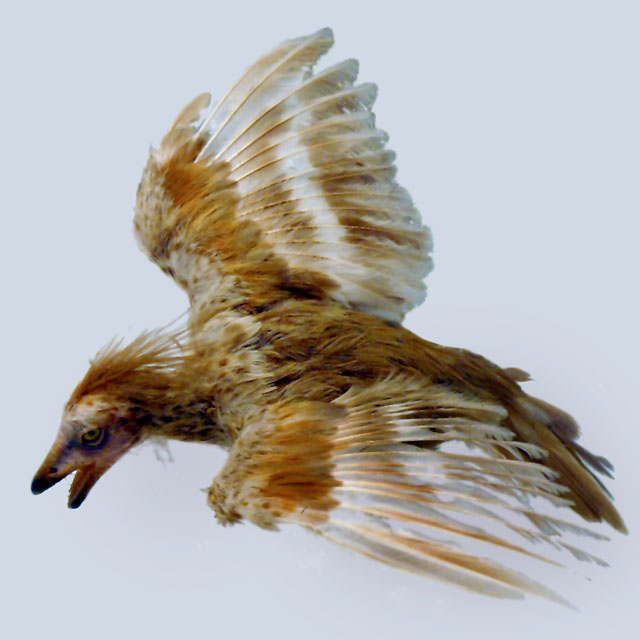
Español: Reconstrucción de un Iberomesornis expuesto en el Museo Nacional de Ciencias Naturales de Madrid